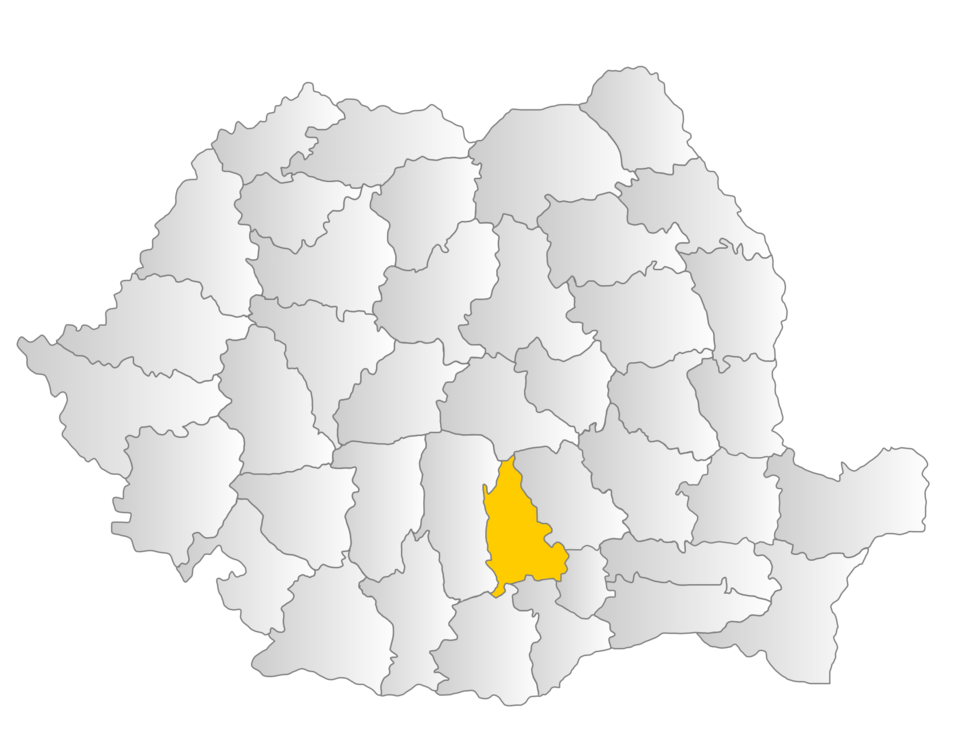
own work